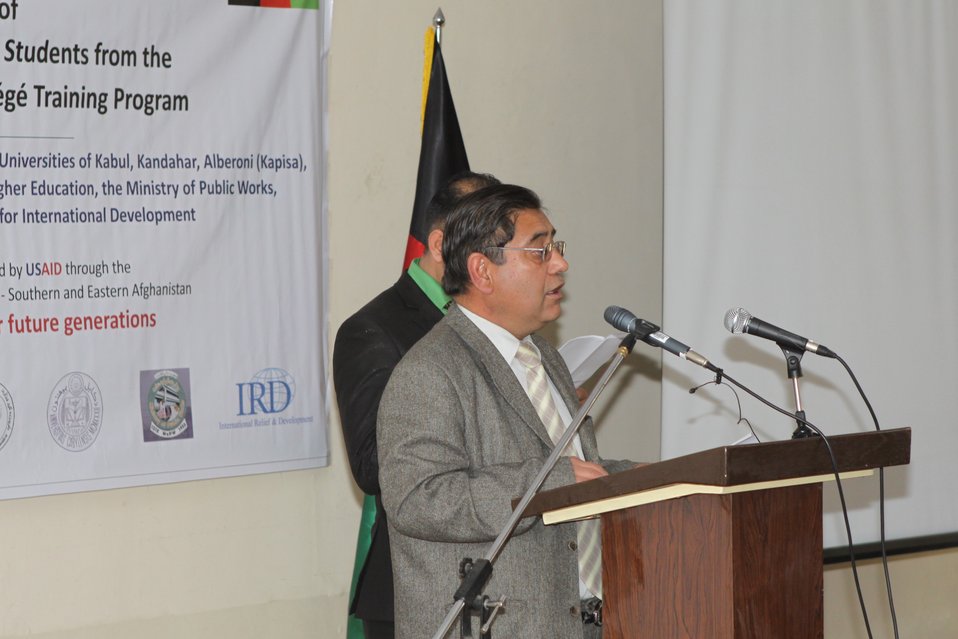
Female University Students Complete Internship

Kabul, Afghanistan | March 16, 2011 – In response to a demand for qualified Afghan engineers, Kabul University celebrated completion of an intensive five-month Mentor Protégé Training Program today by 10 female fourth year university students. The Training Program is a joint effort between the Government of the Islamic Republic of Afghanistan, the U.S. Agency for International Development (USAID), and the Universities of Kabul, Kandahar, Alberoony in Kapisa, Shiekh Zayed in Khost. The graduation ceremony highlighted collaboration with these national institutions in building the technical skills of young Afghans, made possible by USAID.

Four of the interns are engineers, while the remaining six are from the faculties of computer science, economics, and psychology.

Speaking about the event, H.E. Minister of Public Works Abdul Qudus Hamidi said, “The future of Afghanistan lies in developing the skills of our youth, and the engineering skills of these graduates today represent a small but important step forward for the country.”

Keynote speakers at the ceremony included H.E. Deputy Minister of Higher Education Abdul Rahim; USAID Senior Deputy Mission Director Robert Hellyer; and Chancellor of Kabul University Professor Hamidullah Amin. Approximately 150 people, including current and former students attended the graduation.

Launched last year, the Mentor Protégé Training Program has provided qualifying students the opportunity to intern with USAID’s Strategic Provincial Roads-South and East Afghanistan project and gain practical experience in a real work environment. The goal of the program was to offer interns the opportunity to gain hands-on experience to reinforce their formal studies. A total of 30 students from four national universities have benefitted from this program.

“The promotion of women’s rights is integrated into the overall U.S. Government development strategy and can be found in key programs, including education, healthcare, security, rule of law, political participation, agriculture, and economic development,” said Robert Hellyer. “The U.S. Government is committed to the Afghan leadership of programs that directly enhance development, particularly as it relates to women’s issues.”

This event also highlighted the learning achievements of students and emphasized the importance of hands-on internship programs. The curriculum is designed to instill students with the knowledge and confidence to qualify for engineering positions upon completion of their fourth year at their respective universities.